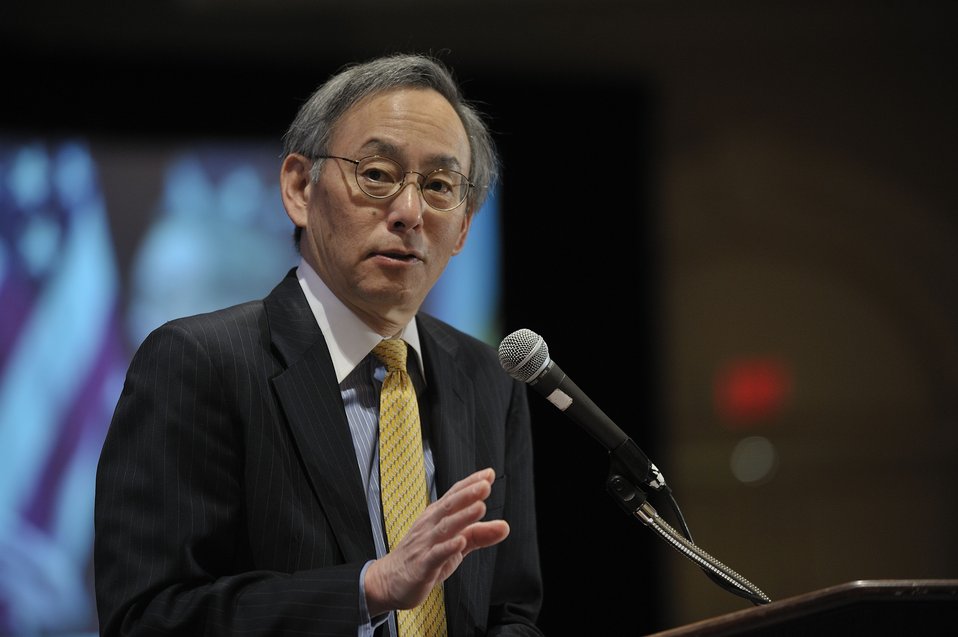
Tribal Energy Summit

Secretary Chu addresses questions submitted over the internet.